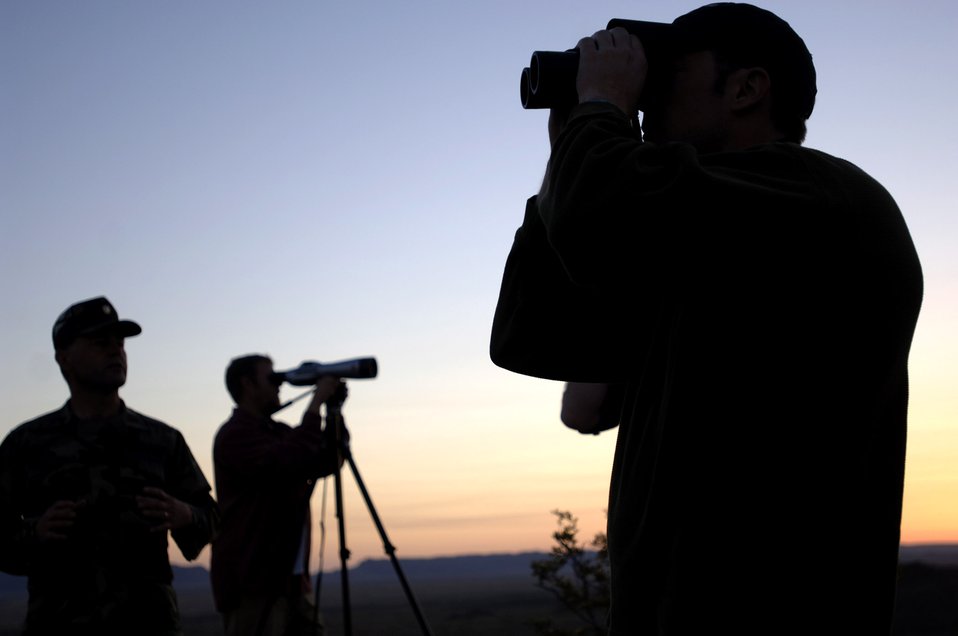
Managing 'million' means mission might

(Left to right) Maj. Daniel Garcia, Erik Stenehjem and J.T. Hesse conduct routine pronghorn antelope monitoring at the Barry M. Goldwater Range in Phoenix, Ariz., on Monday, April 24, 2006. Once no signs of antelope are confirmed, mission bombings and strafing can begin on the range. The three men are assigned to the 56th Range Management Office at Luke Air Force Base, Ariz.